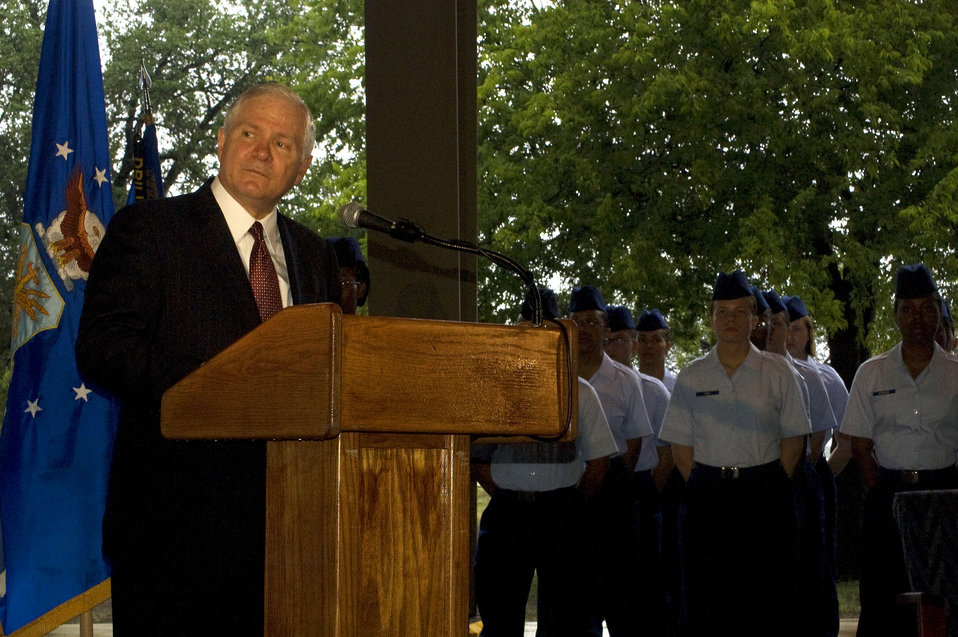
SECDEF visits Airmen, tour BMT facilities

Defense Secretary Robert M. Gates speaks to Airmen at Lackland Air Force Base, Texas, July 24 just prior to the basic trainees receiving their Airman's coin. Secretary Gates toured the Air Force's Basic Military Training facility and praised the trainees on their perseverance and dedication.